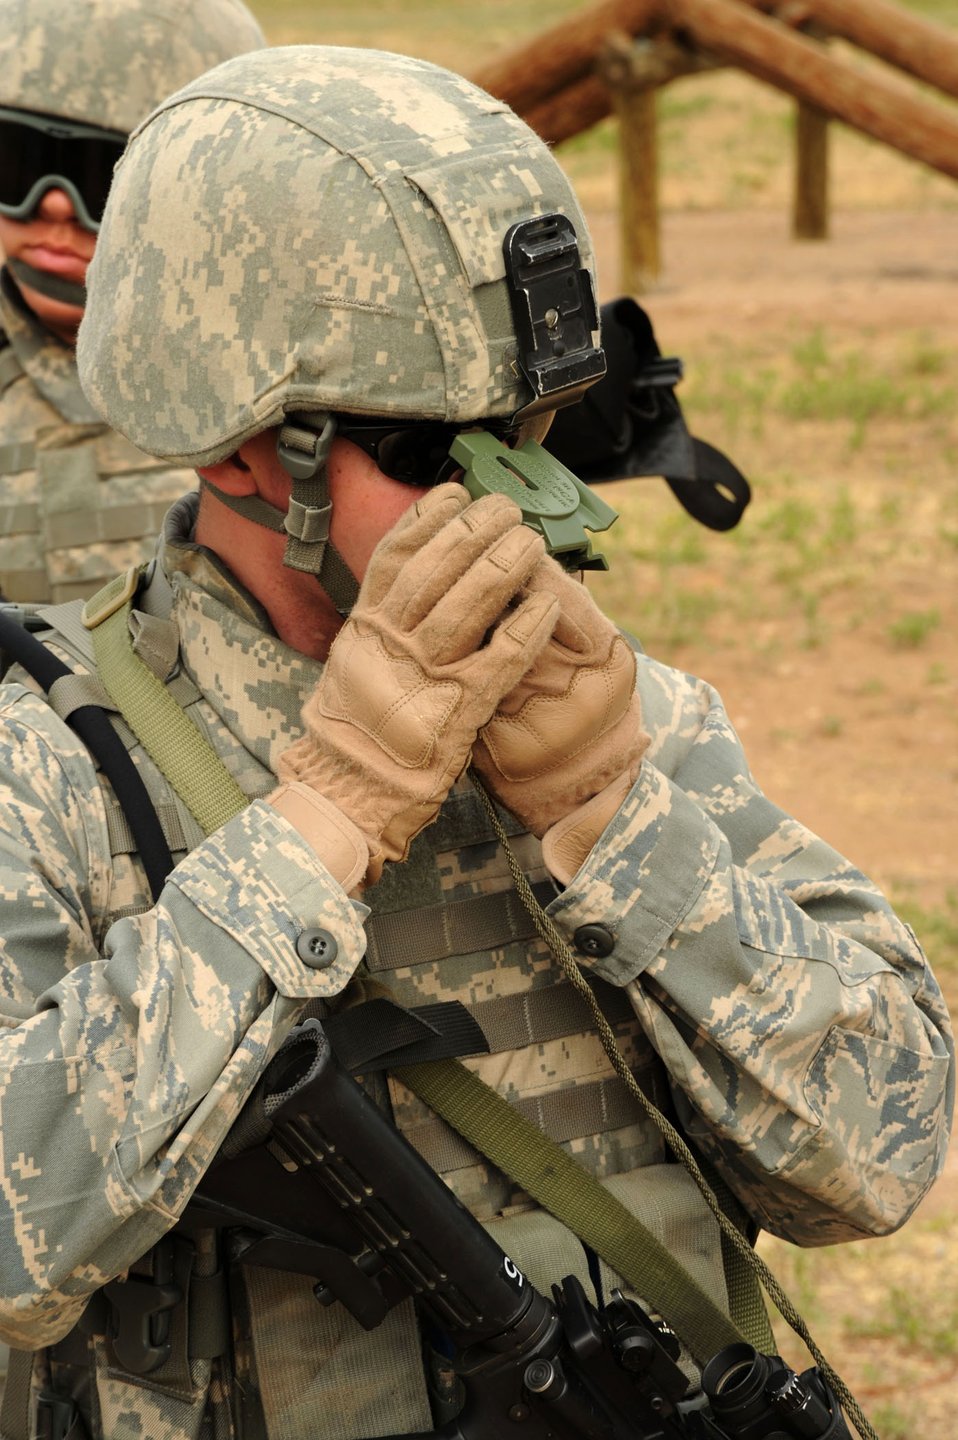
Security Forces Airmen take part in combat skills training

Airman 1st Class Nicholas Paine helps navigate his squad during a week-long combat skills training course Aug. 27, 2010, at Hill Air Force Base, Utah. Airman Paine is a security forces member with the 75th Security Forces Squadron.